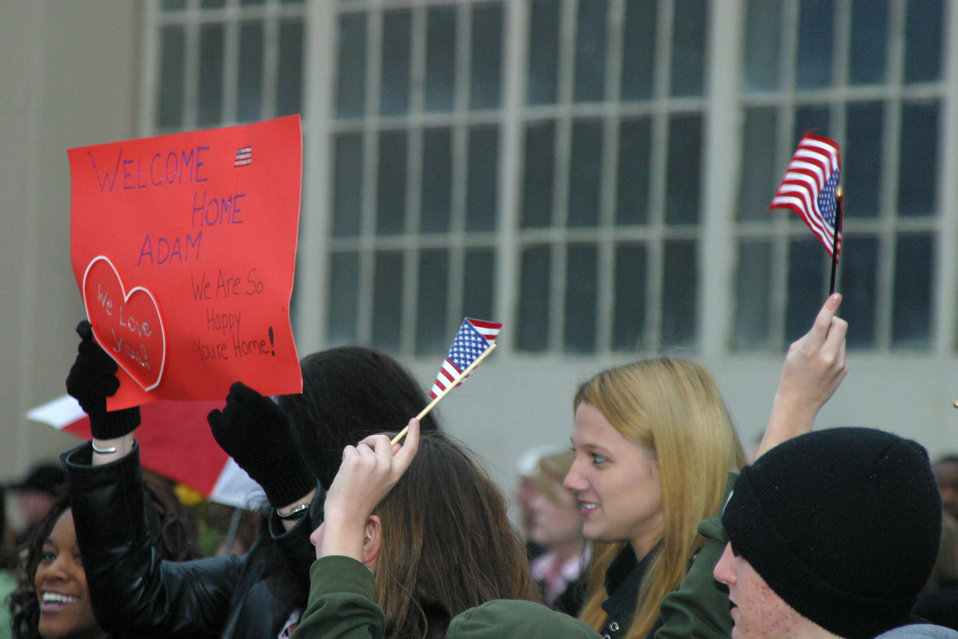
Pope homecoming

Family members of the 23rd Fighter Group wait for their Airmen to return from a four-month deployment to Afghanistan Jan. 21 at Pope Air Force Base, N.C.